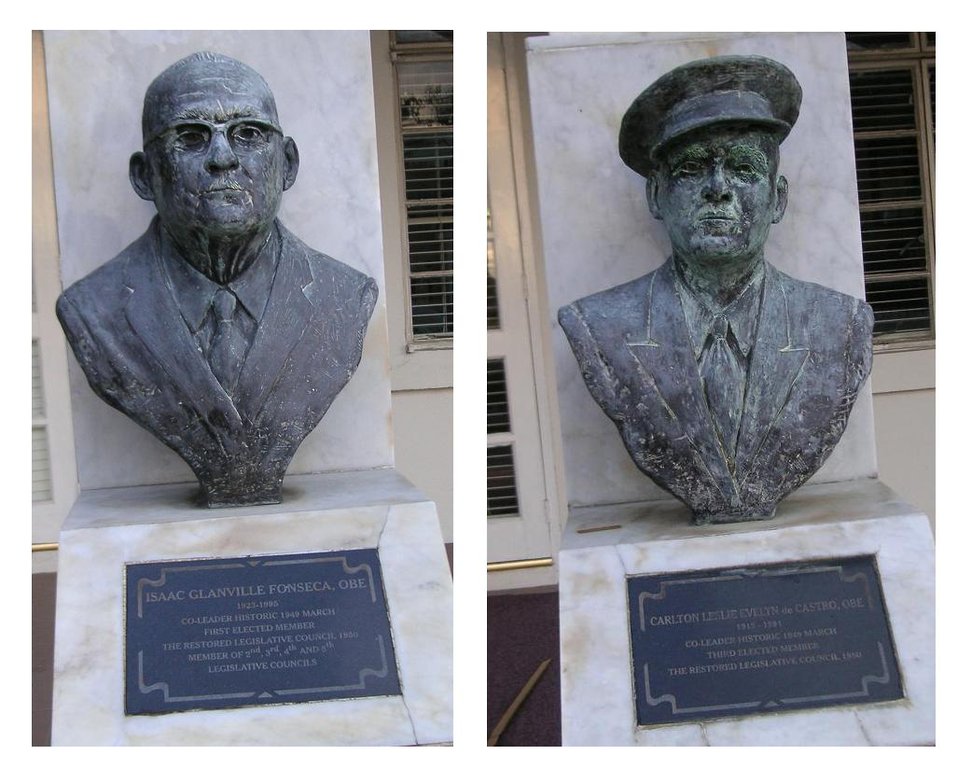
Photograph of the busts of Carlton de Castro and Isaac Fonseca outside of the Legislative Council building in Road Town, Tortola, British Virgin Islands